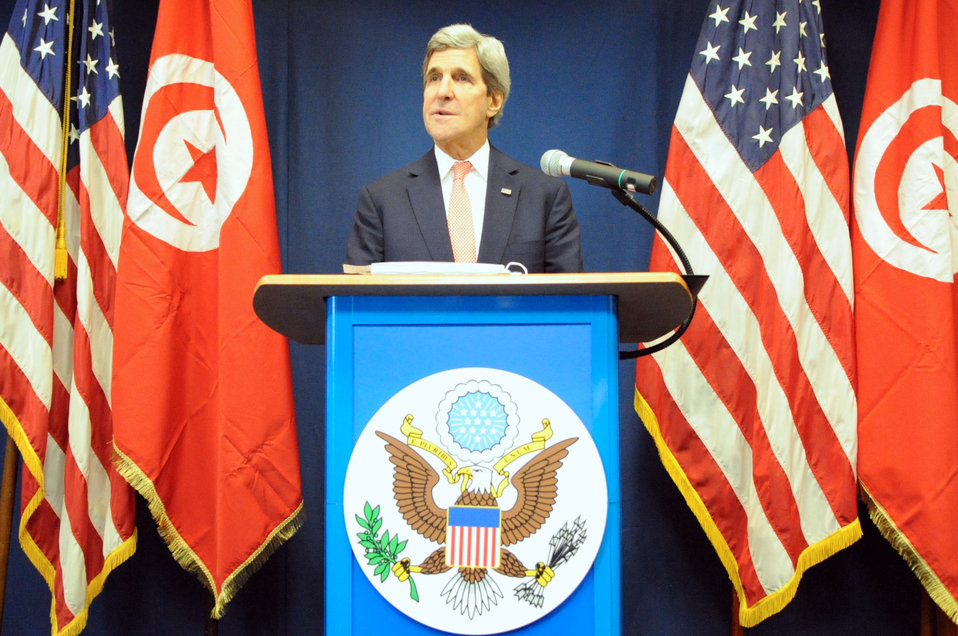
Secretary Kerry Conducts News Conference After Meetings in Tunisia

U.S. Secretary of State John Kerry conducts a news conference at the U.S. Embassy in Tunis, Tunisia, on February 18, 2014.